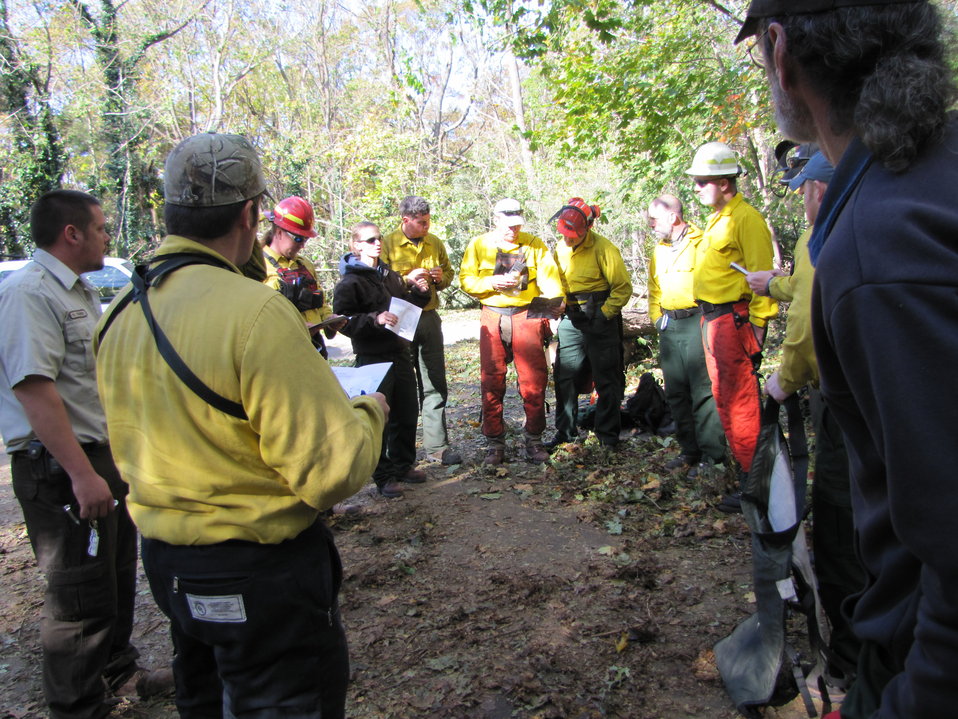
Preparing for a busy day of tree clearing after Hurricane Sandy (NY)

Long Island National Wildlife Refuge staff meet with sawyers to plan the day at Target Rock NWR.